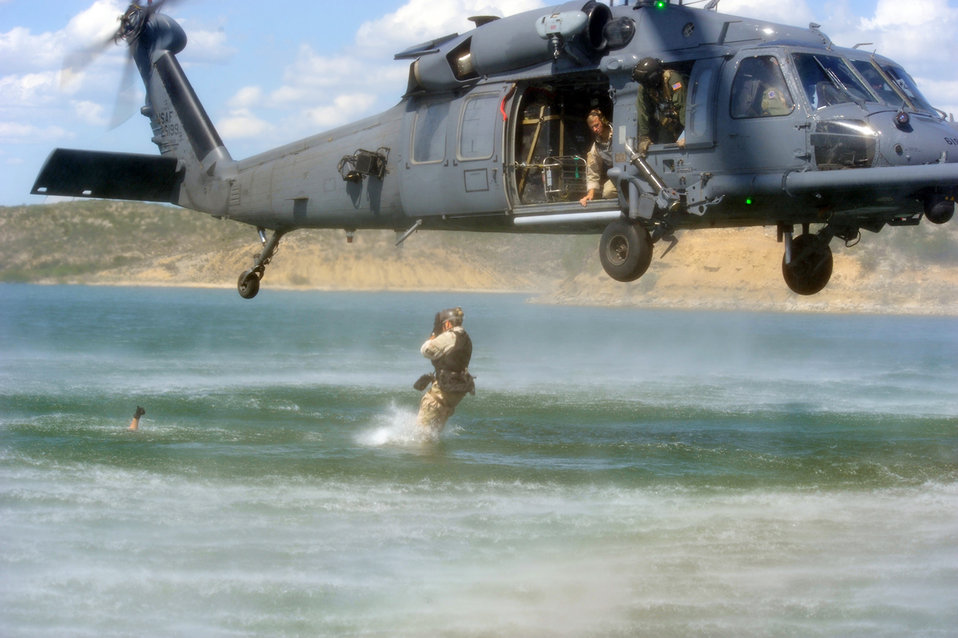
Testing the waters

Staff Sgt. Kevin Myerscough enters the water after jumping from an HH-60G Pave Hawk while Master Sgt. Michael Atkins gives the safe thumbs-up and Senior Airman Brent Moore provides oversight June 3 near Laughlin Air Force Base, Texas. The members of the 48th Rescue Squadron from Davis-Monthan AFB, Ariz., were participating in Exercise Resolute Angel in preparation for the upcoming hurricane season.